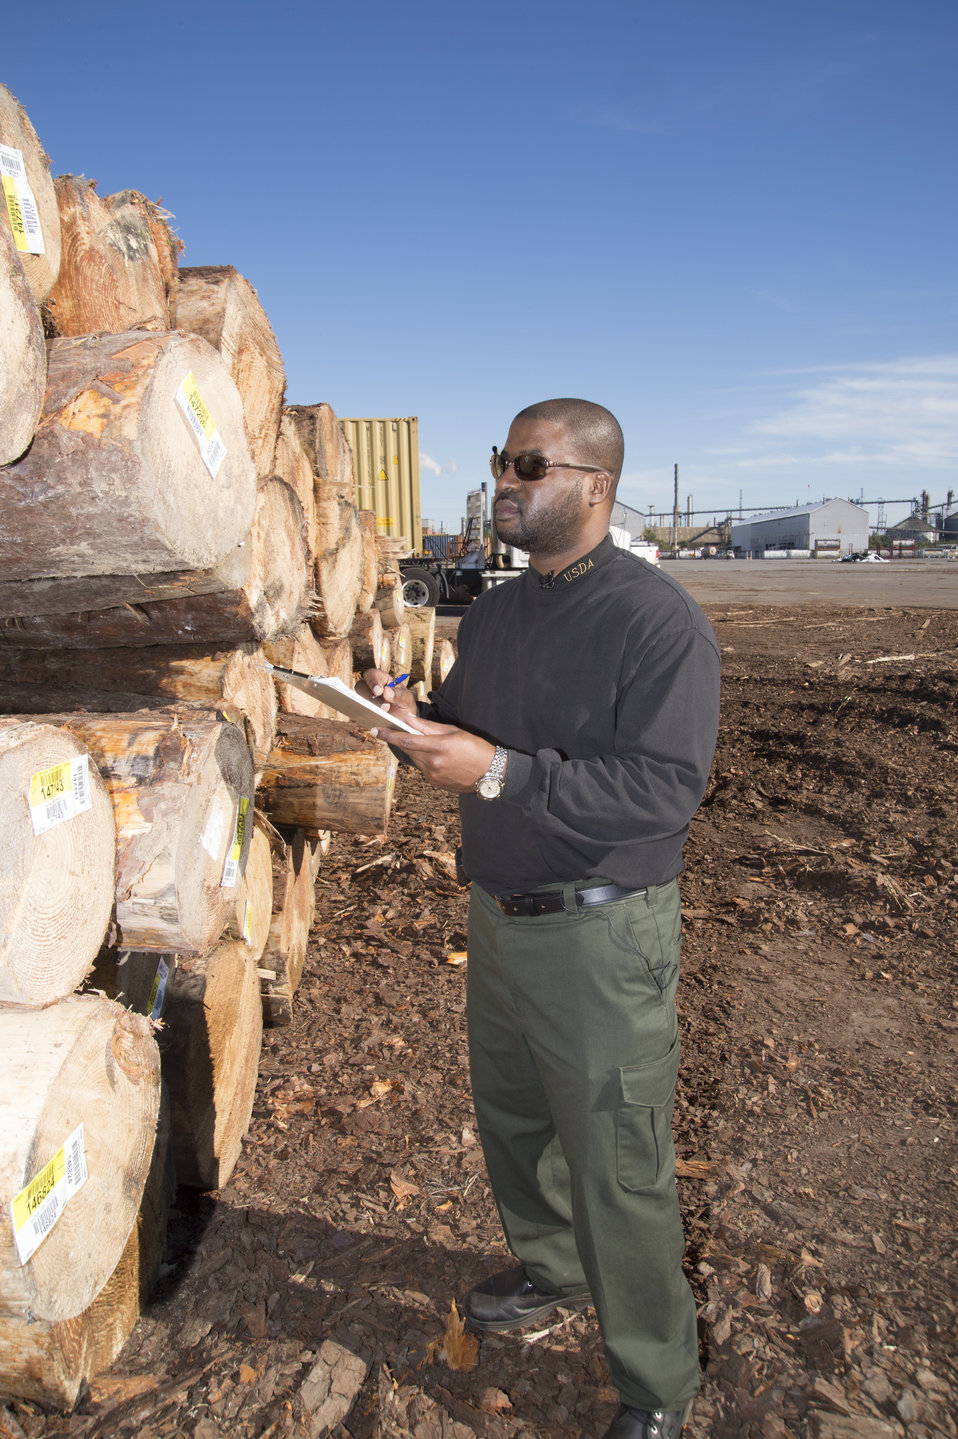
U.S. Department of Agriculture’s (USDA) Animal and Plant Health Inspection Service (APHIS) employee inspects fumigated logs near the Port of New Orleans in New Orleans, LA on Wednesday, Nov. 20, 2013. The fumigation process prevents the spread of any bacteria or insect that might cause harm to a foreign country’s agriculture.